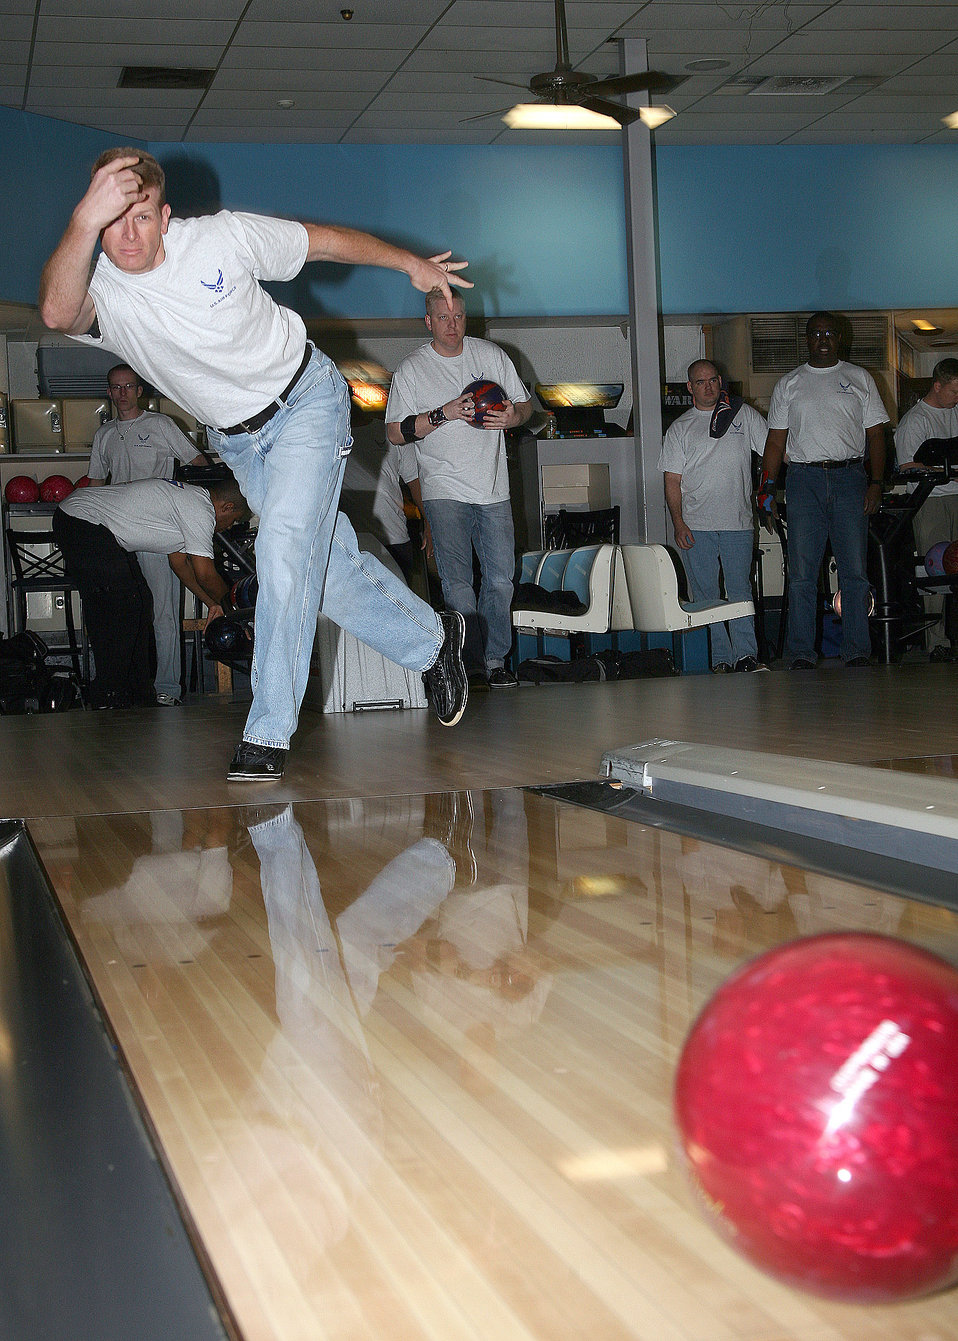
Air Force selects bowling team

Ron Hurt bowls a frame during the Air Force Bowling Tournament Dec. 31 at the Skylark Bowling Center at Lackland Air Force Base, Texas. Mr. Hurt, who is stationed at Shaw AFB, S.C., was one of 50 Airmen competing for a spot on the Air Force Bowling Team.